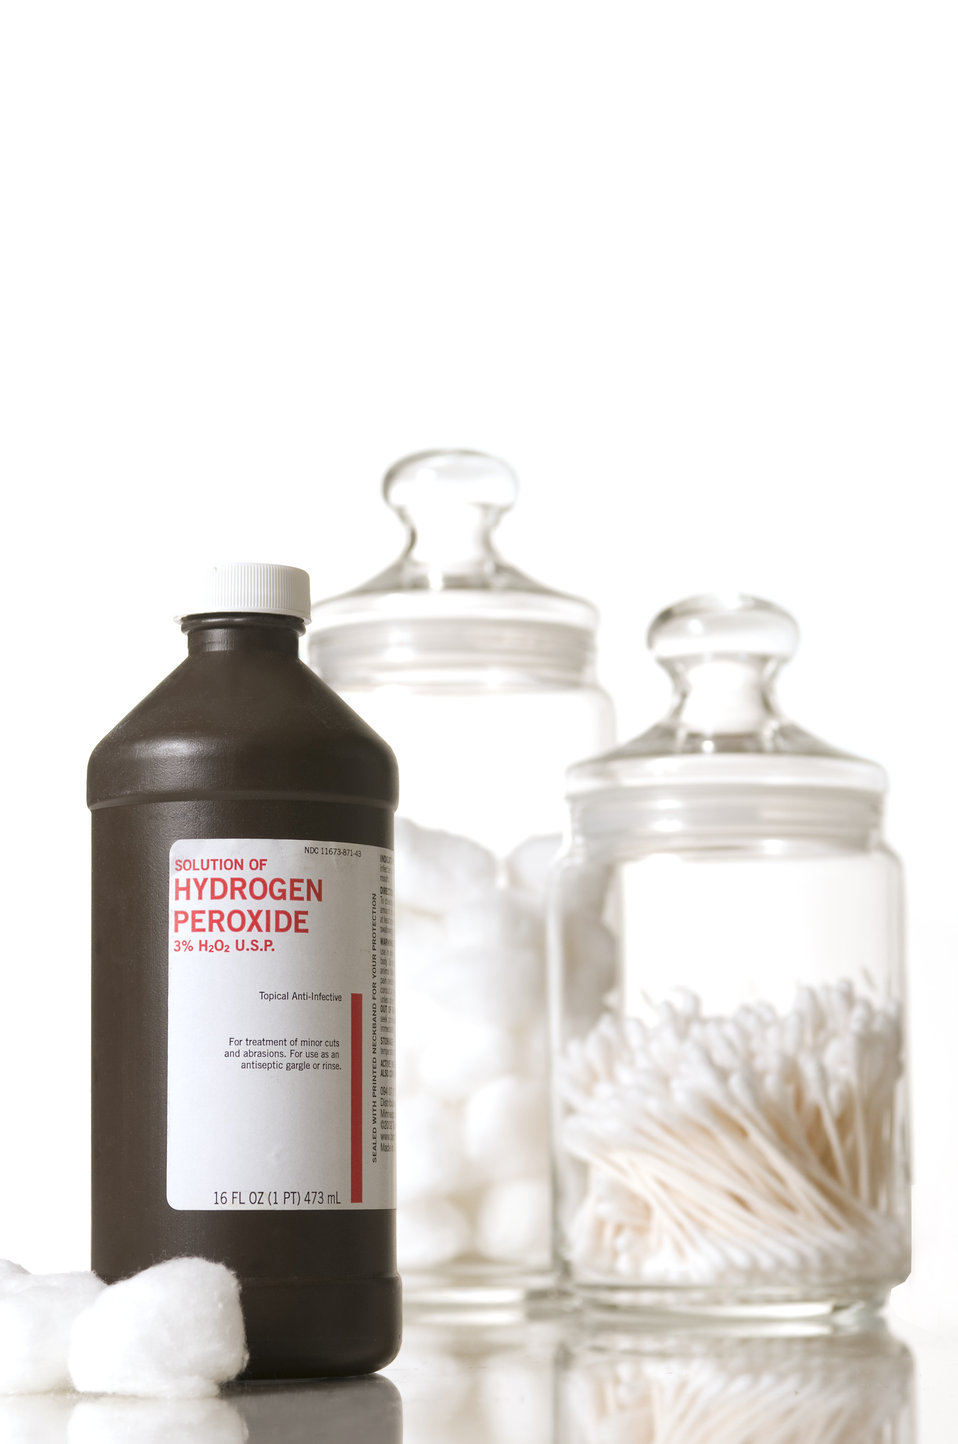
Depicted in this still life, are items associated with the sterile delivery of proper health care. Pictured here is a bottle of the disinfectant, hydrogen peroxide (H2O2), and two glass apothecary jars one containing sterile Q-tips, and the other containing cotton balls. Two loose cotton balls were set on the counter in front of the bottle of H2O2.